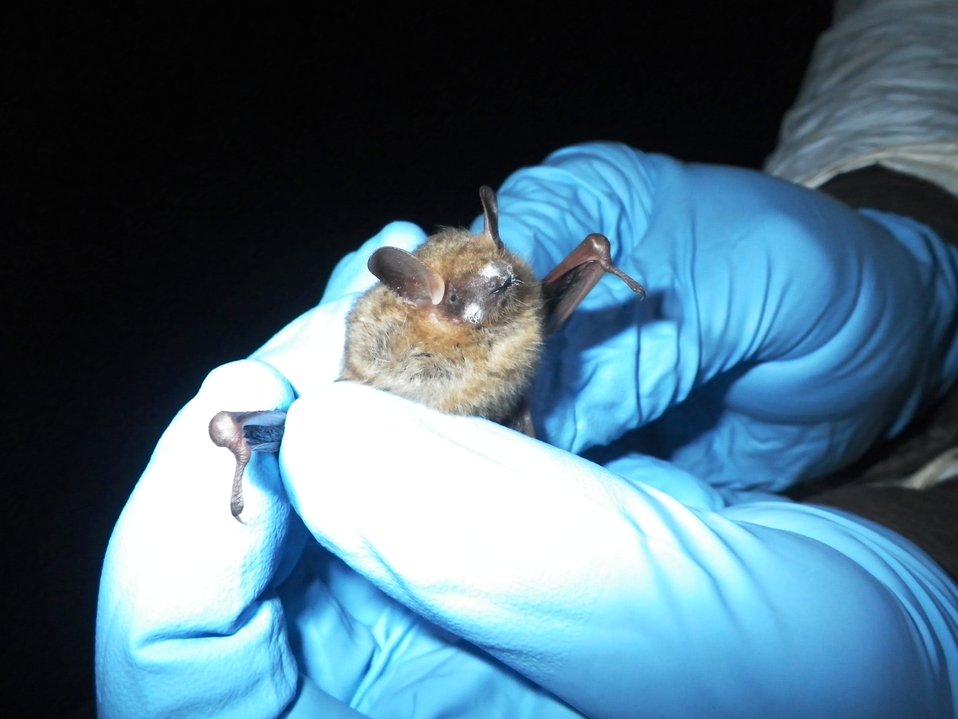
Infected tri-colored bat (Perimyotis subflavus) in Jackson County, Alabama